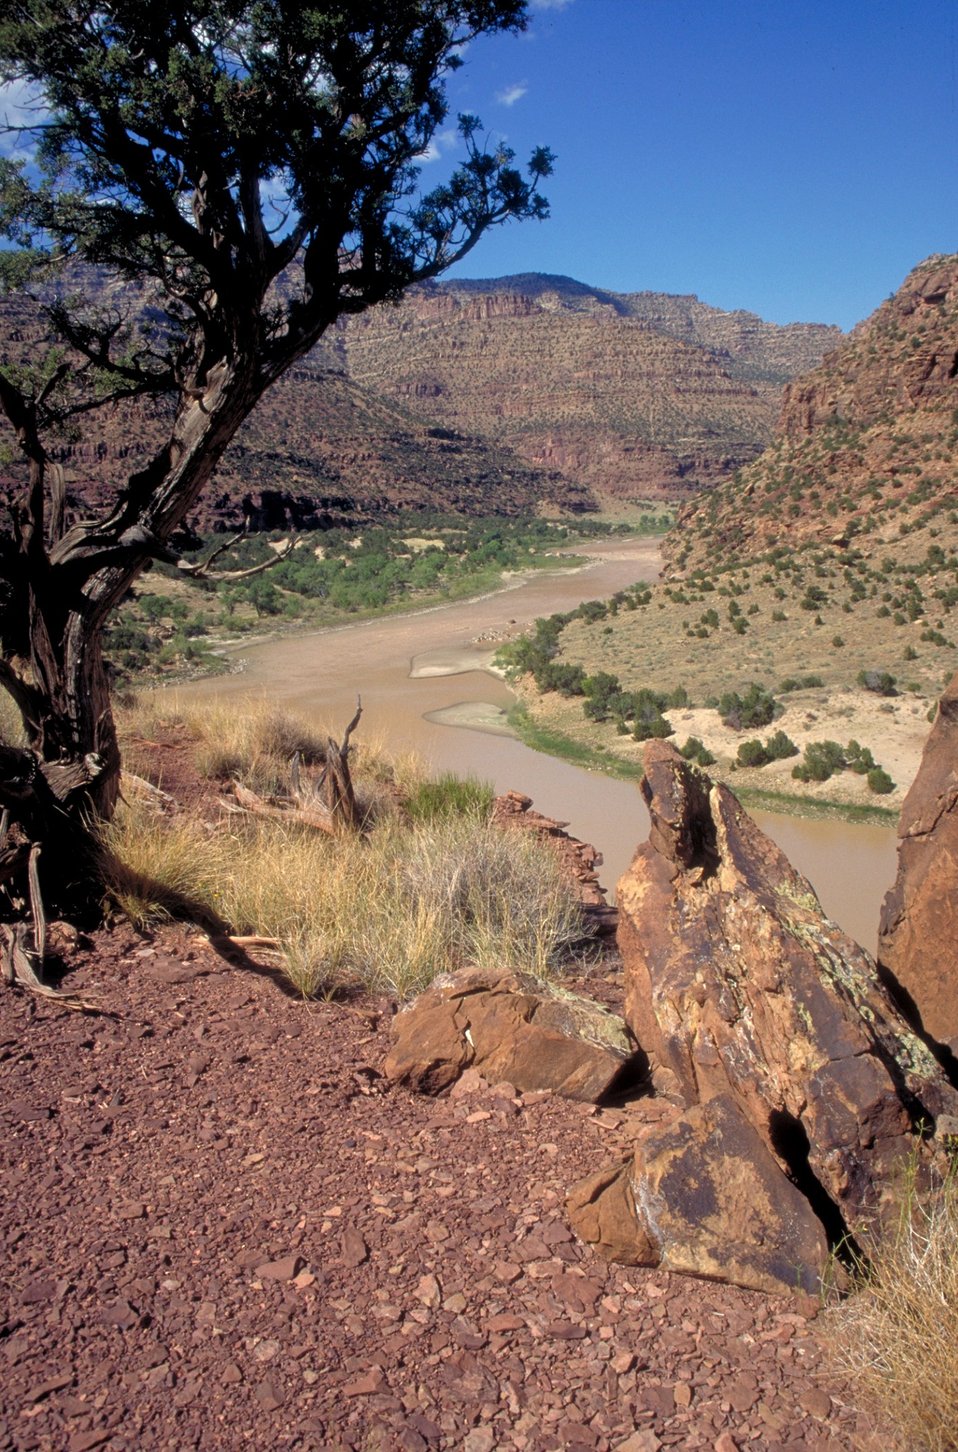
Desolation/Gray Canyons near Price, Utah.